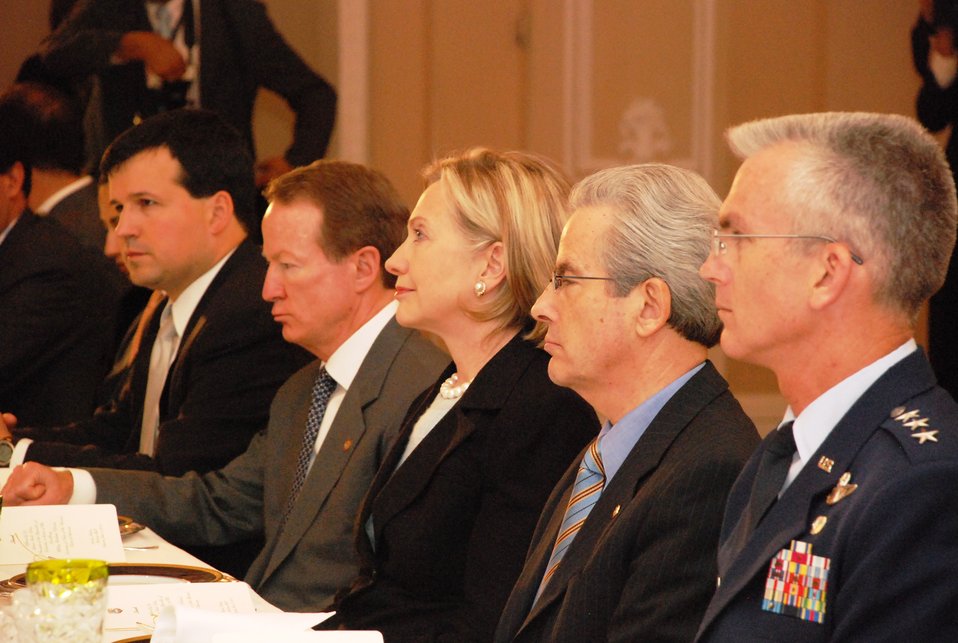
Secretary Clinton Attends Luncheon Hosted By Colombian President

Colombian President Uribe welcomes U.S. Secretary of State Hillary Rodham Clinton and U.S. Assistant Secretary of State for Western Hemisphere Affairs Arturo Valenzuela to a luncheon with his cabinet in Bogotá, Colombia, on June 9, 2010.